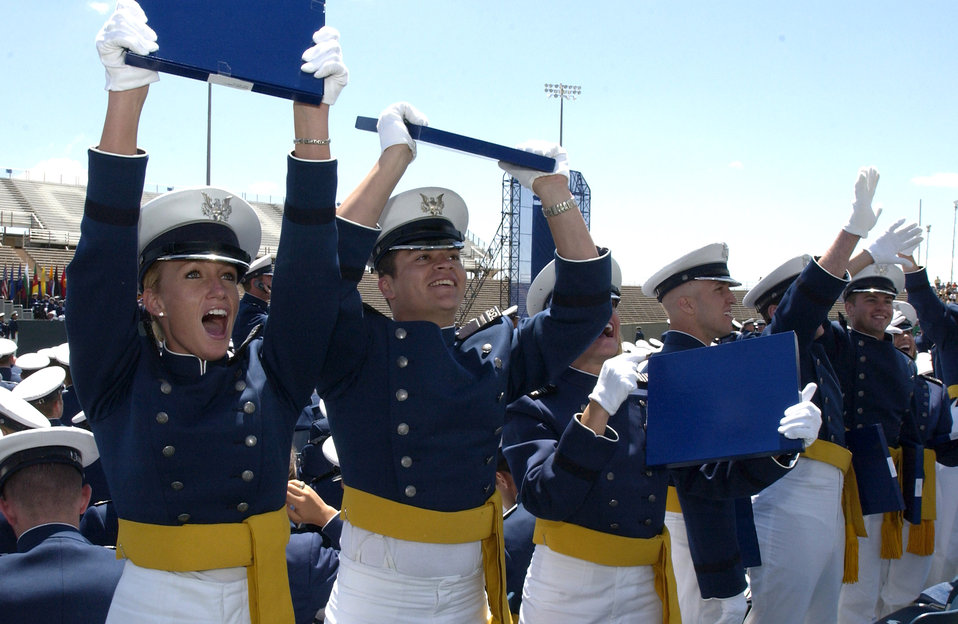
'Stay true' SECDEF tells Air Force Academy grads

Newly minted 2nd Lieutenants Catlin Butterfield, David Drennan and Kandi Hendershied celebrate during the 2007 U.S. Air Force Academy graduation ceremony May 30 in Colorado Springs, Colo.